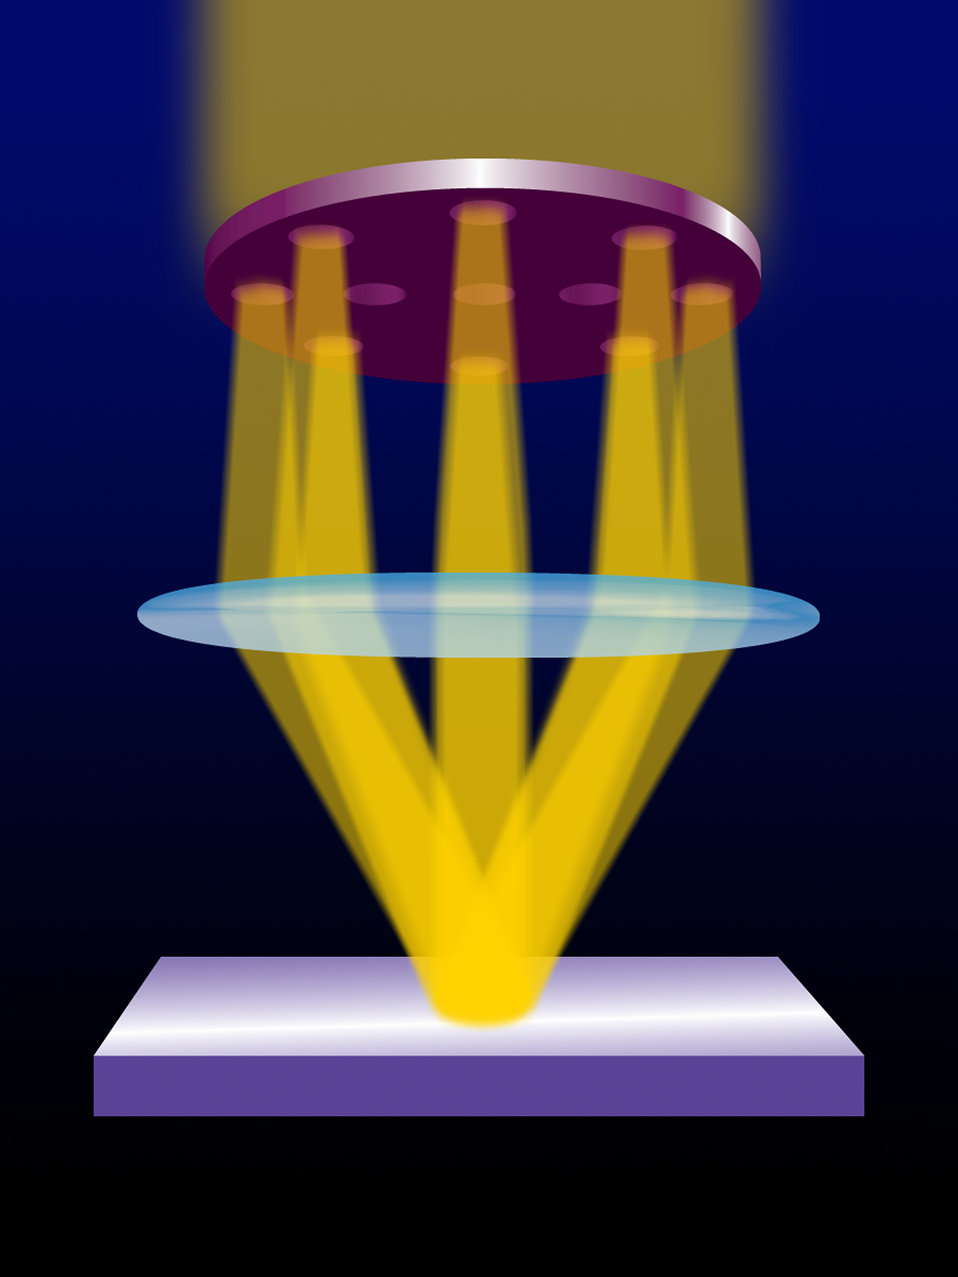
Optical Nano Vision

A new optical imaging technology under development at NIST will use combinations of dynamically controlled light waves, optimized for particular properties (such as polarization). How this structured illumination field -- engineered specifically to highlight the particular geometry of each type of specimen -- scatters after striking the target may reveal features smaller than 10 nanometers.